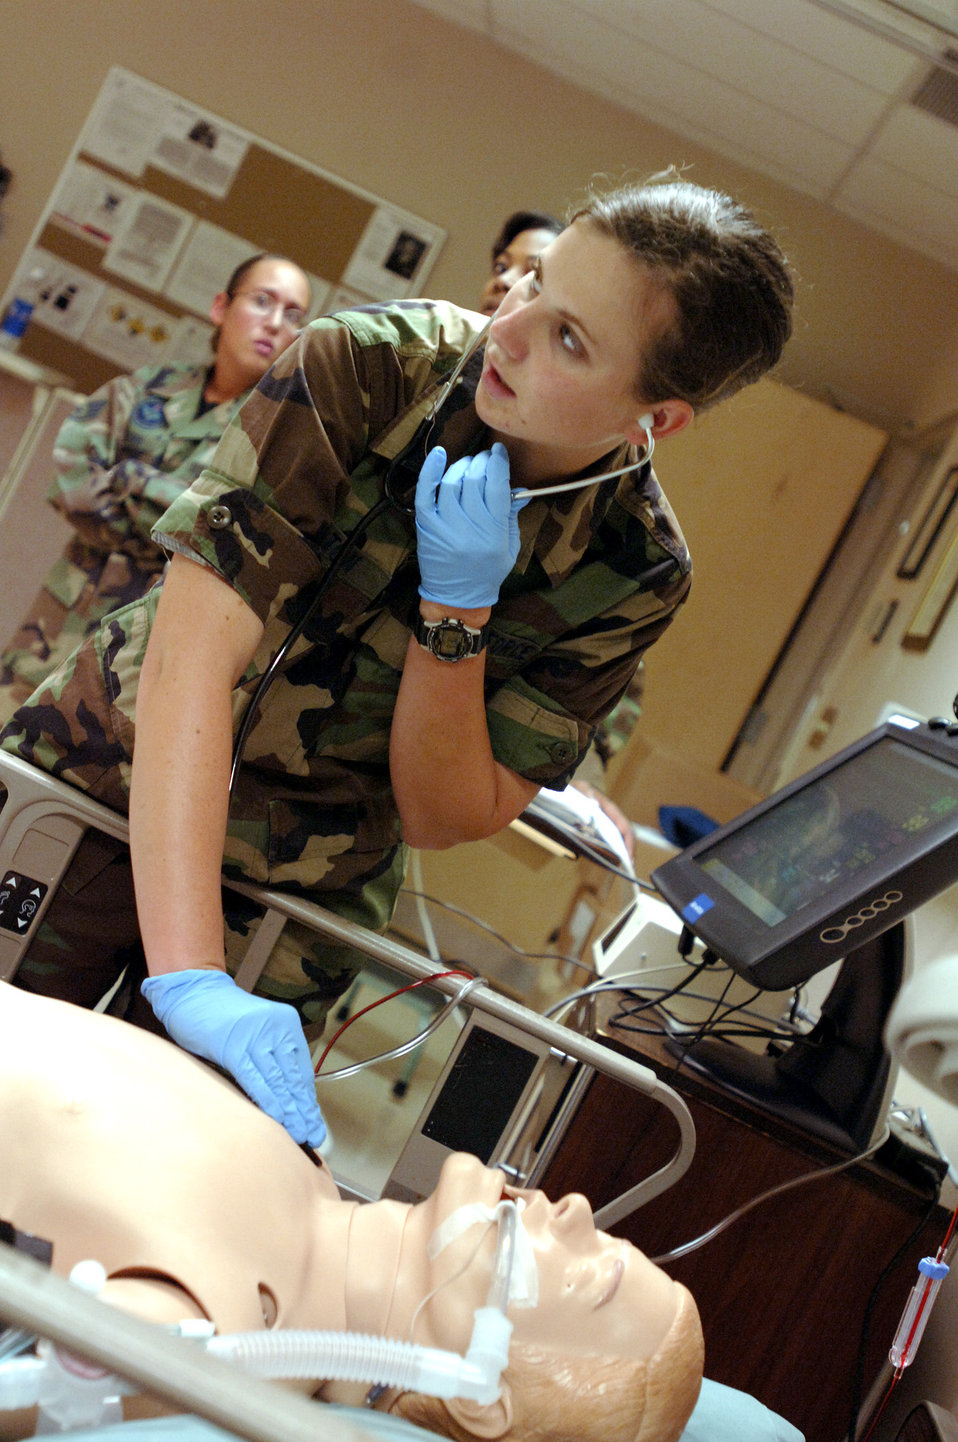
Sheppard implements new phase program

Air Force medical technical training students are among the Airmen in training at Sheppard Air Force Base, Texas, now enjoying expedited privileges following the implementation of a new phase program there.